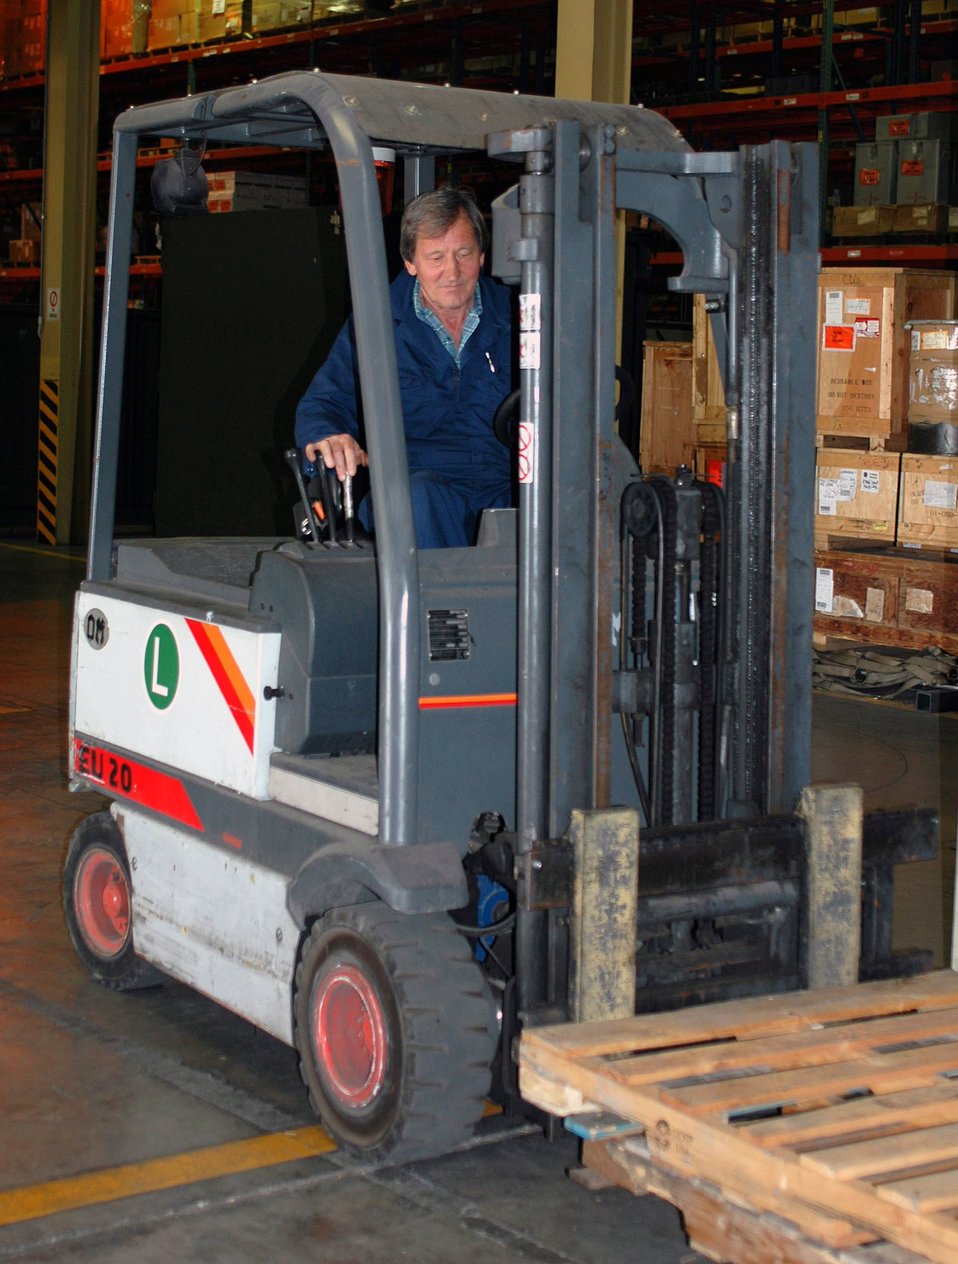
AFSO 21 at Aviano Air Base, Italy

Vidotto Lorenzo stacks pallets May 31 to make more room in an Aviano Air Base, Italy, supply warehouse. Mr. Lorenzo is assigned to the 31st Logistics Readiness Squadron.